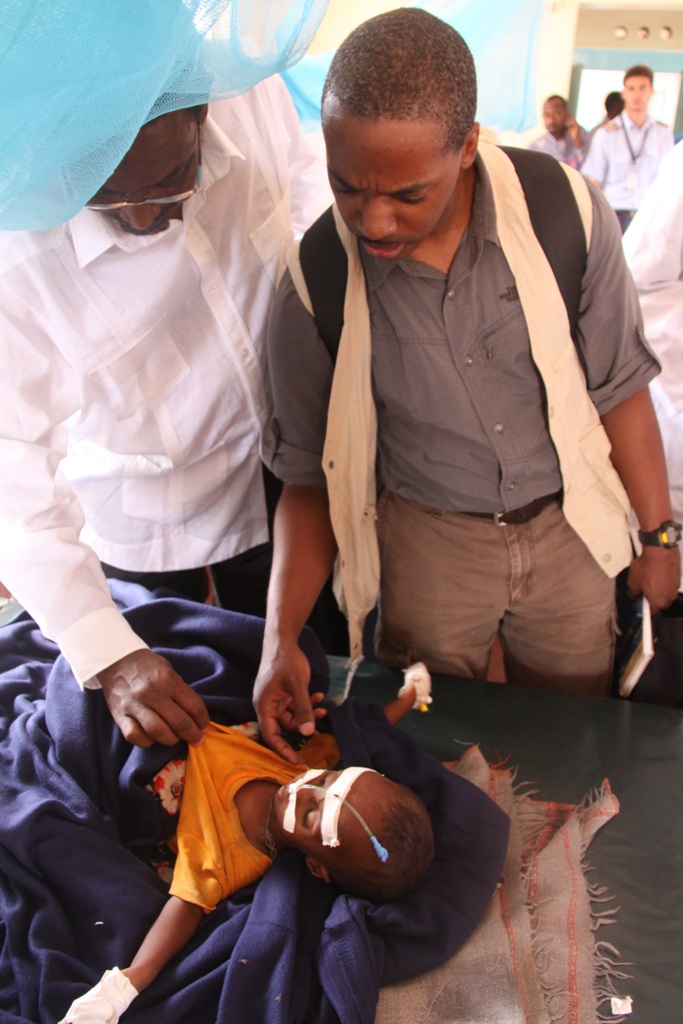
Deputy Assistant Secretary Brigety Visits a Hospital in Dadaab, Kenya

Deputy Assistant Secretary Reuben Brigety visits a ward for severely malnourished children in Dadaab, Kenya on July 13, 2011.